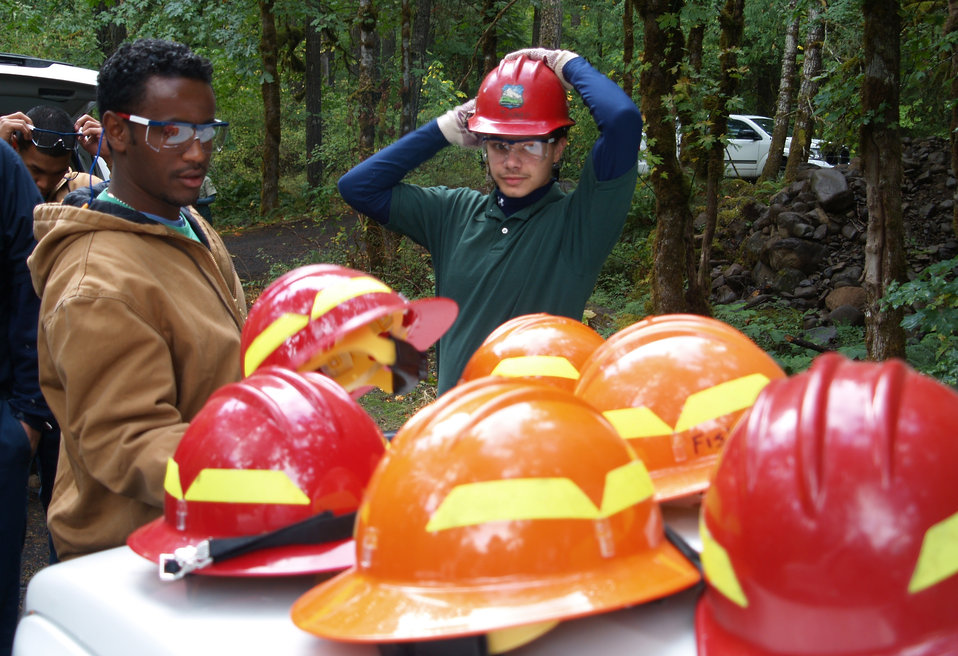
September 29, 2009. Estacada, OR. Timber Lake Job Corps Center students Biniyam Desta (l) and Barry Lee (r) don safety equipment before heading out on a streamside restoration project on the Clackamas River. The project enhances the spawning areas of native salmon on the river.